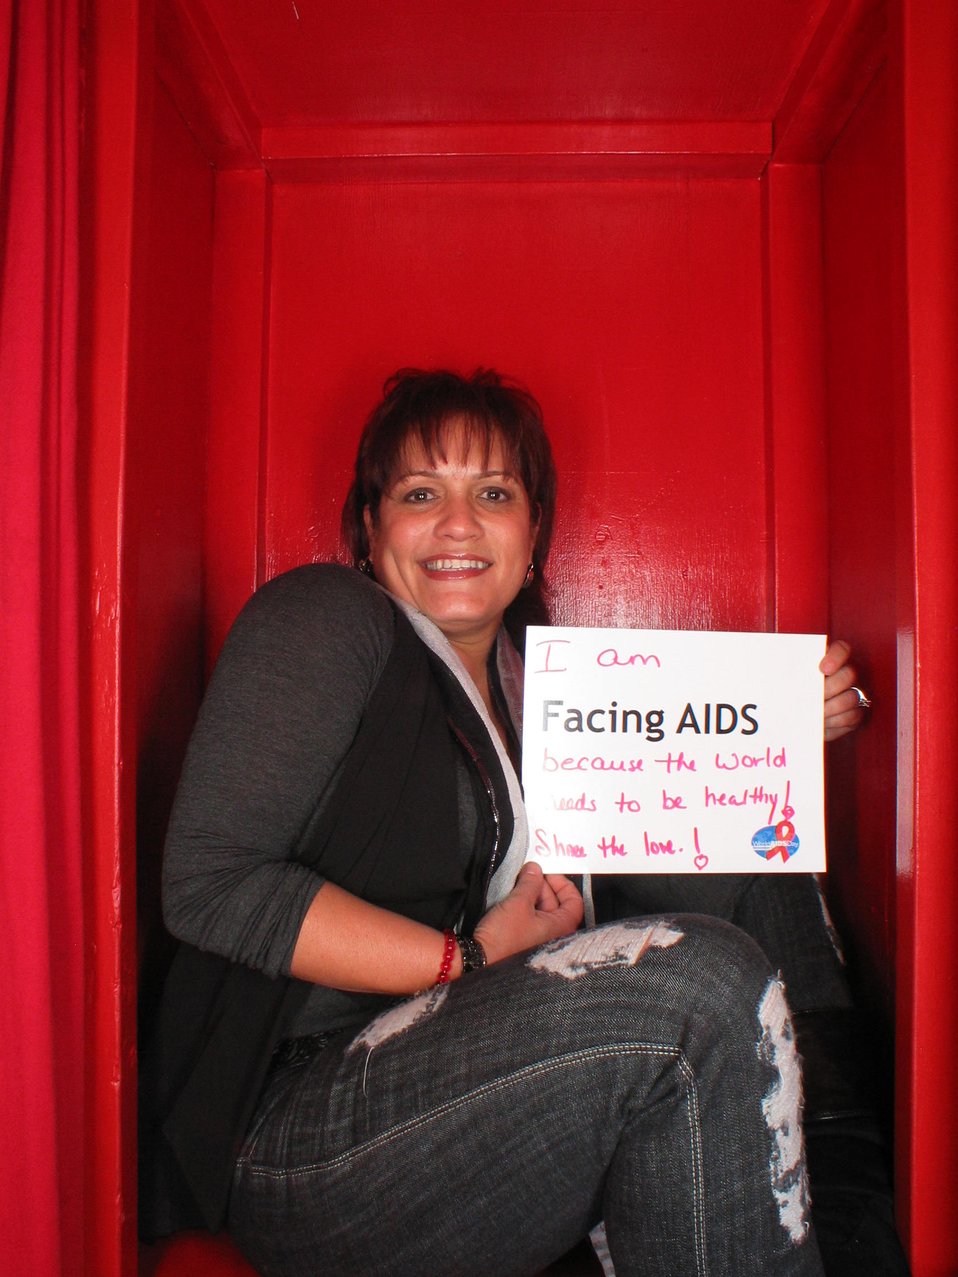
I am Facing AIDS because the world needs to be healthy! Show the love!